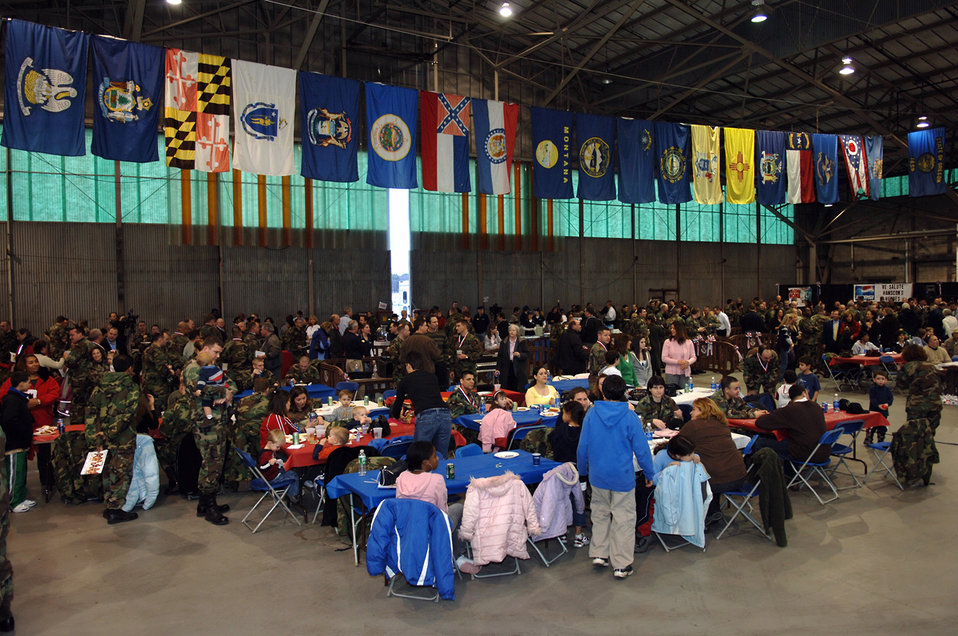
Welcome Home Heroes

A crowd of more than 500 gathered Jan. 19 to welcome recently returned deployers back to Hanscom Air Force Base, Mass.